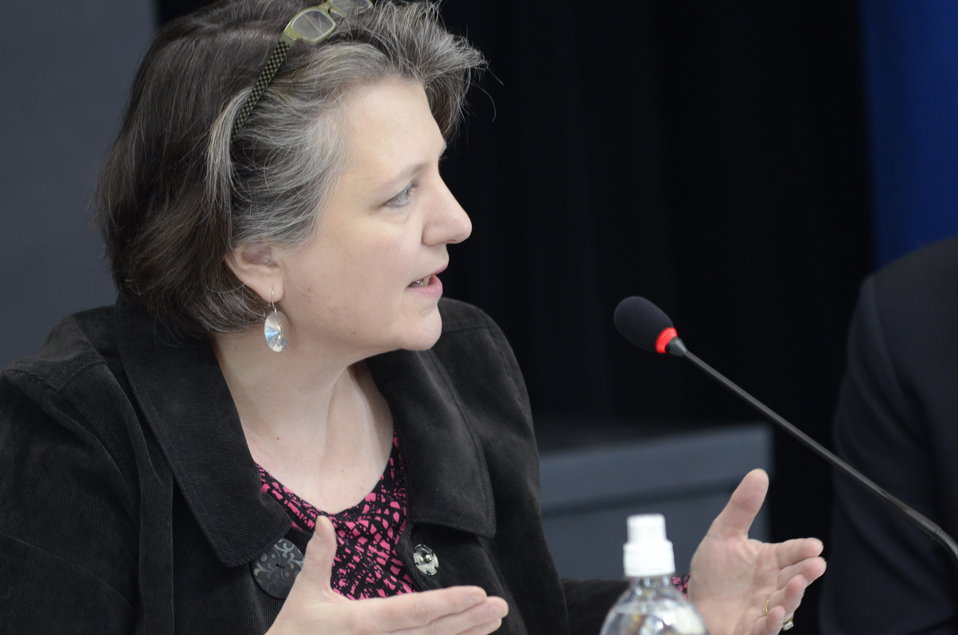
Agriculture Deputy Secretary Kathleen Merrigan and Director, White House Office of Public Engagement Jon Carson, during a Know Your Farmer Compass event that used twitter social media to continue the National Conversation on Local and Regional Food projects and how they offer economic opportunities to local farmers, ranchers and food entrepreneurs. The virtual conversation took place from the White House, in Washington, D.C., on Monday, March 5, 2012.